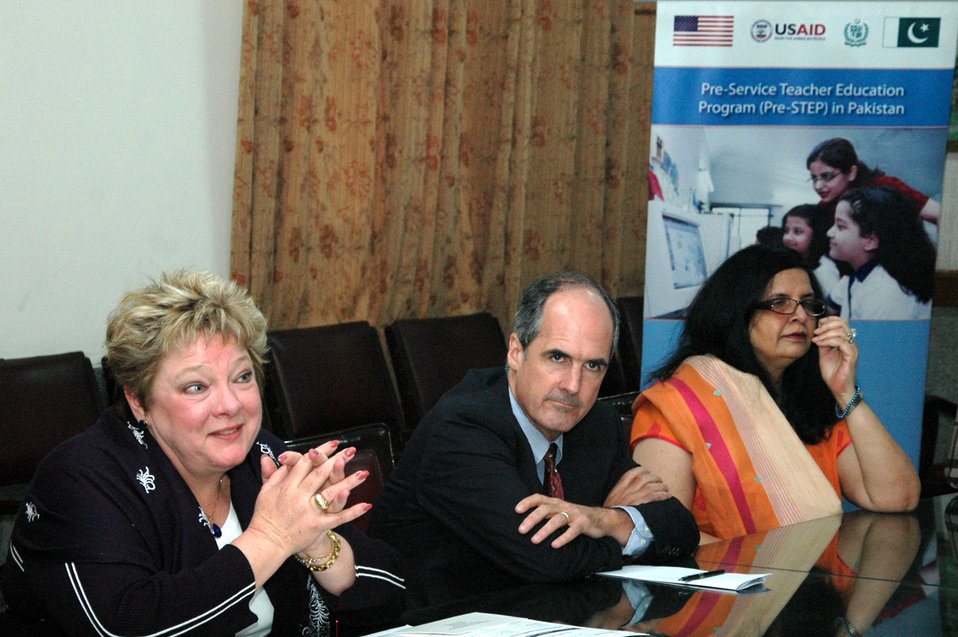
Pre-Service Teachers Education Program (Pre-STEP)

Lahore, February 21, 2012 - Deputy Mission Director USAID/Pakistan, Ms. Karen Freeman and Provincial Director USAID/Punjab, Mr. Ted Gehr during the talk with recipients of scholarship.